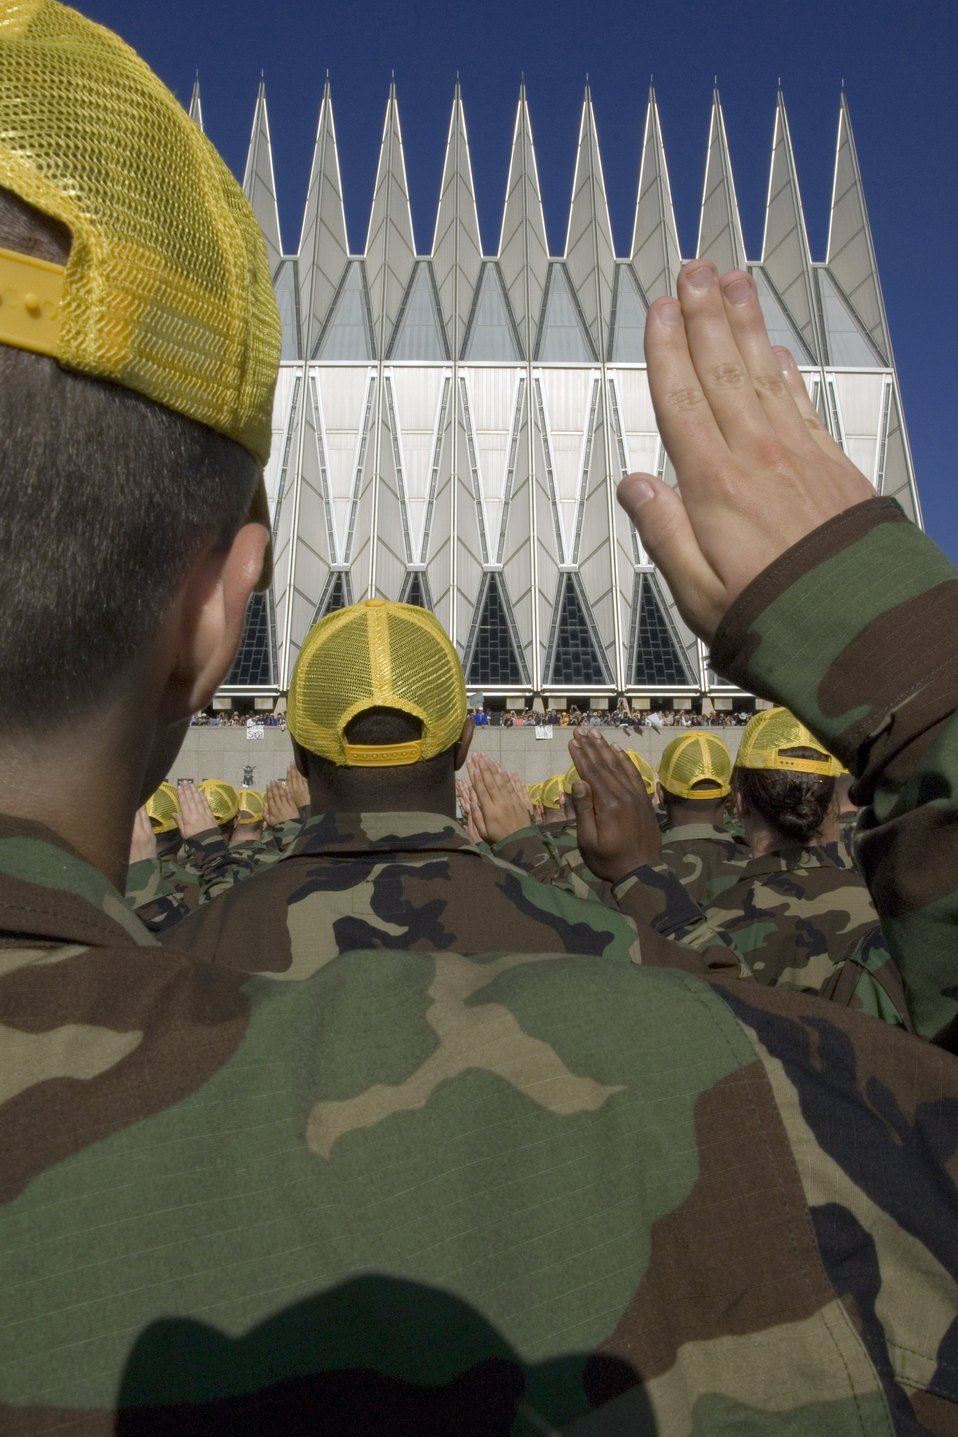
I, do solemnly swear ...

Basic cadets are administered the oath during the swearing-in ceremony as friends and family cheer on their loved ones June 29 at the U.S. Air Force Academy in Colorado. This ceremony marks the beginning of the first half of basic cadet training, commonly known as